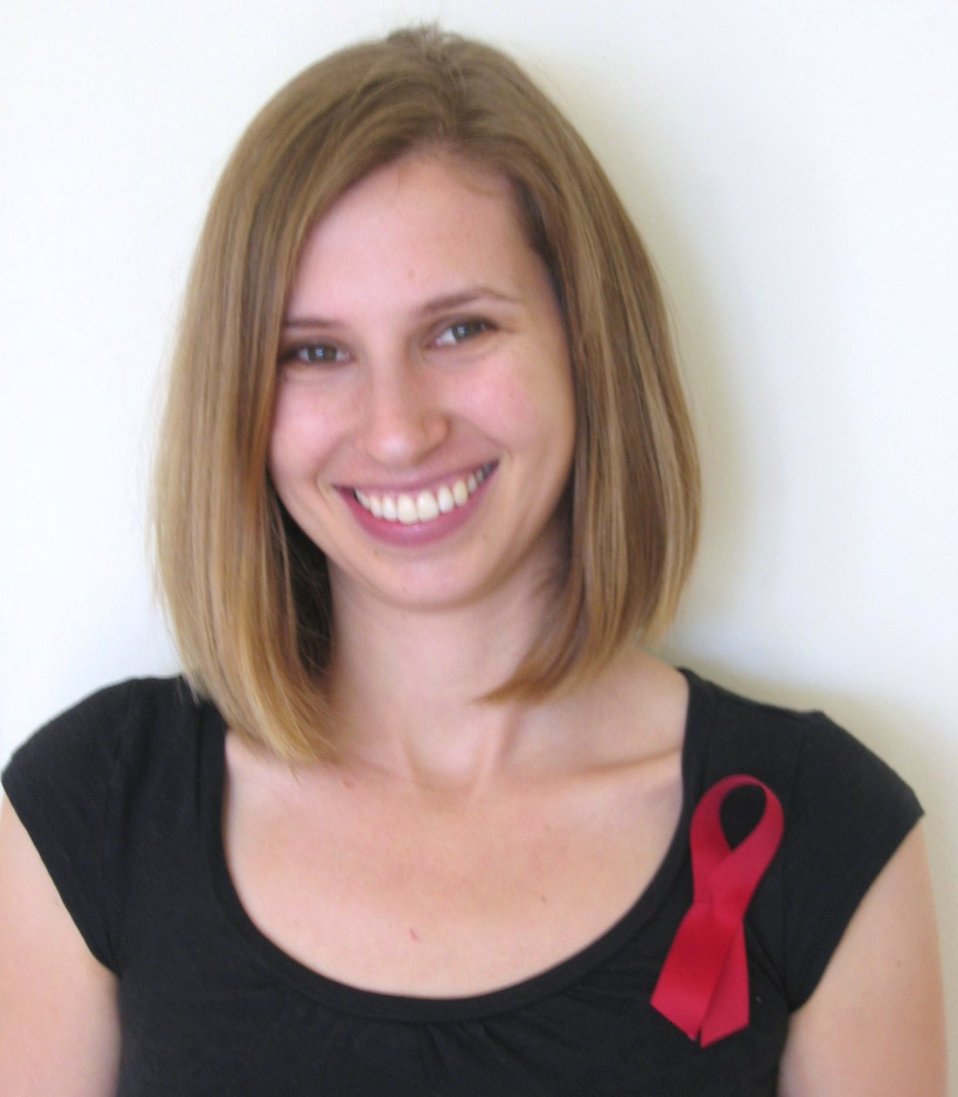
JA